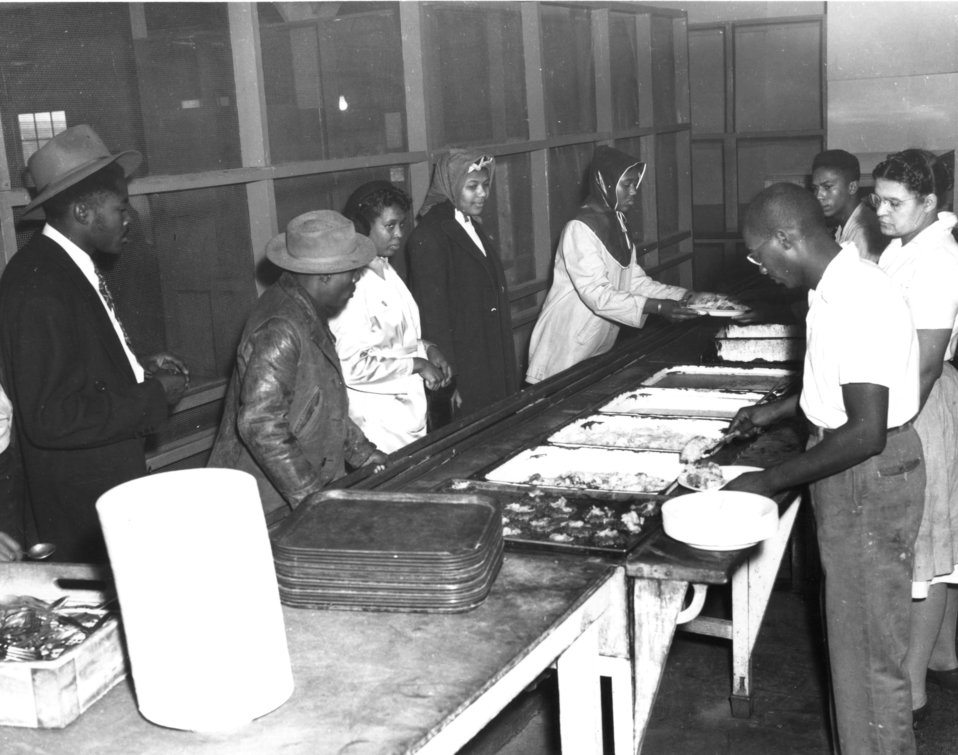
Business activity at Oak Ridge